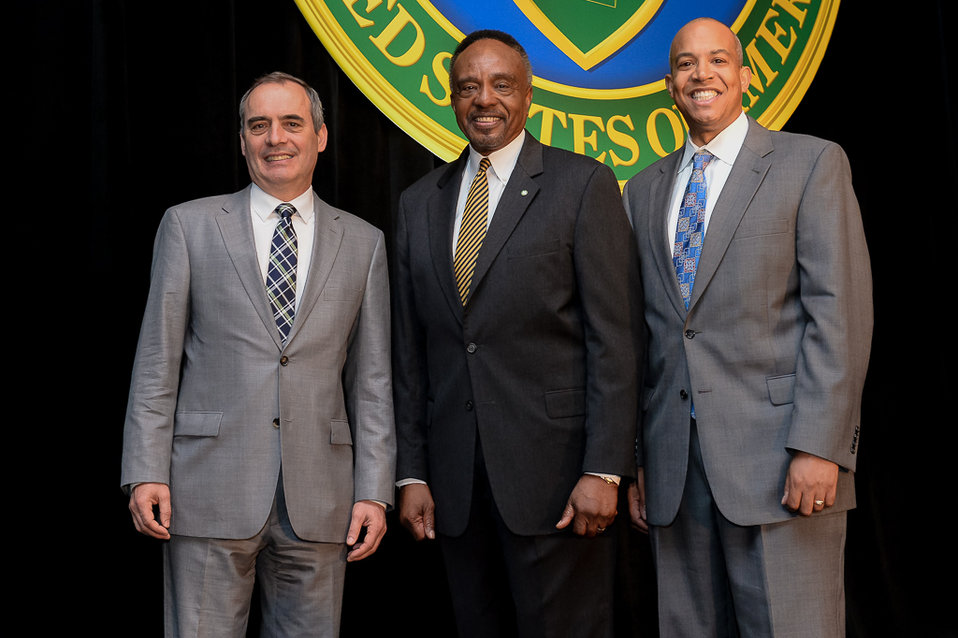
OSDBU Conf 7